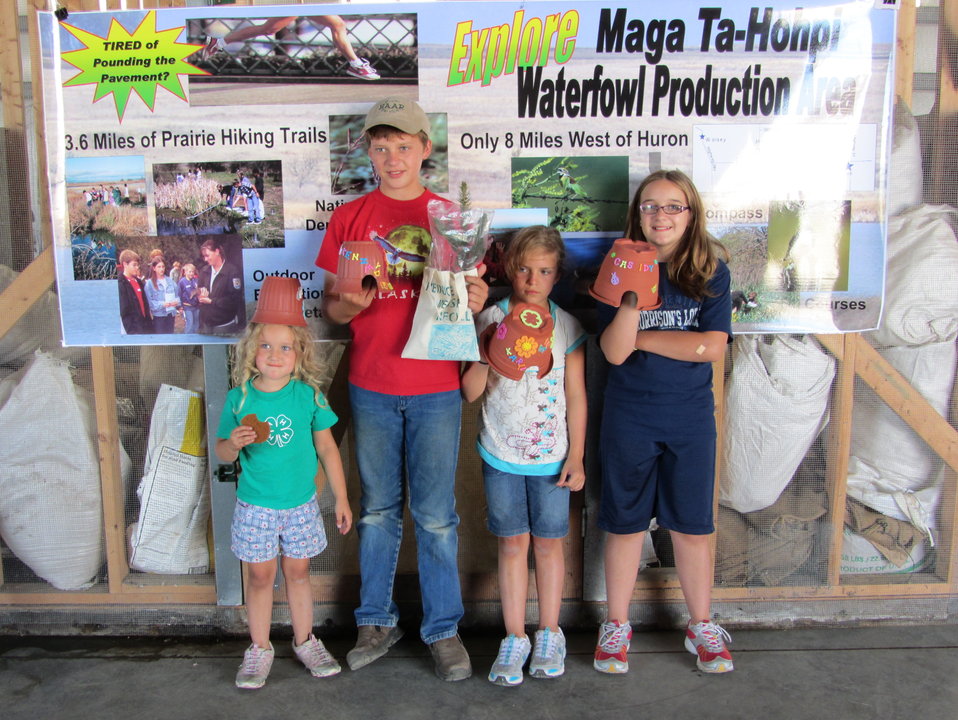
2011 Huron Prairie Fest

Kids with the toad houses they made in the craft tent.